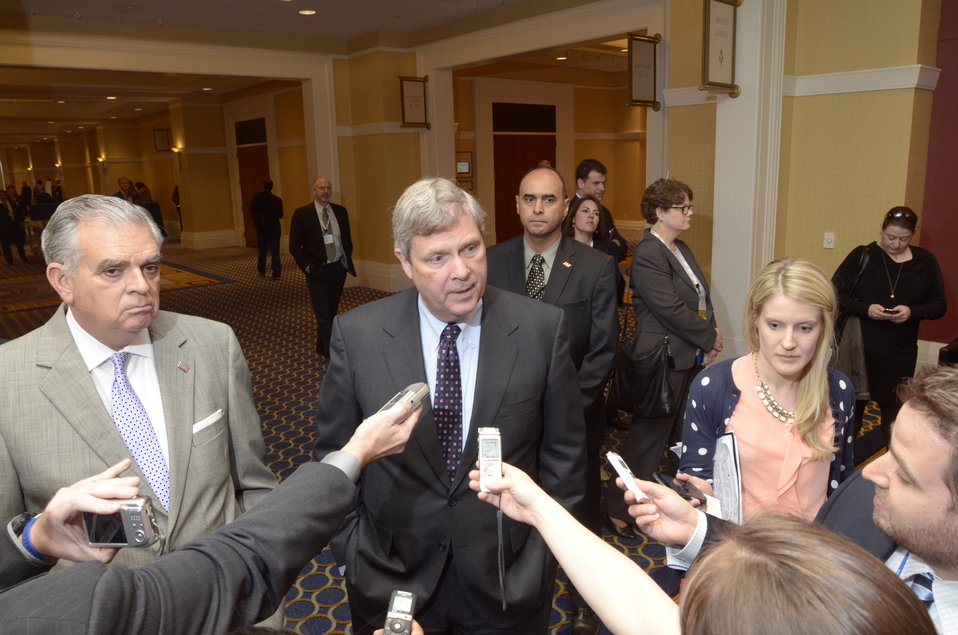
Agriculture Secretary Tom Vilsack (right) and U.S. Department of Transportation (DOT) Secretary Ray LaHood meet with reporters after the announcement today that the U.S. Department of Agriculture (USDA) is extending for five years its agreement to work with the Federal Aviation Administration (FAA) and other partners to help develop a viable biofuel for the aviation industry. The Secretary signed the agreement with U.S. Department of Transportation (DOT) Secretary Ray LaHood at the Advanced Biofuels Leadership Conference at Gaylord National Harbor in Maryland on Monday, April 15, 2013.